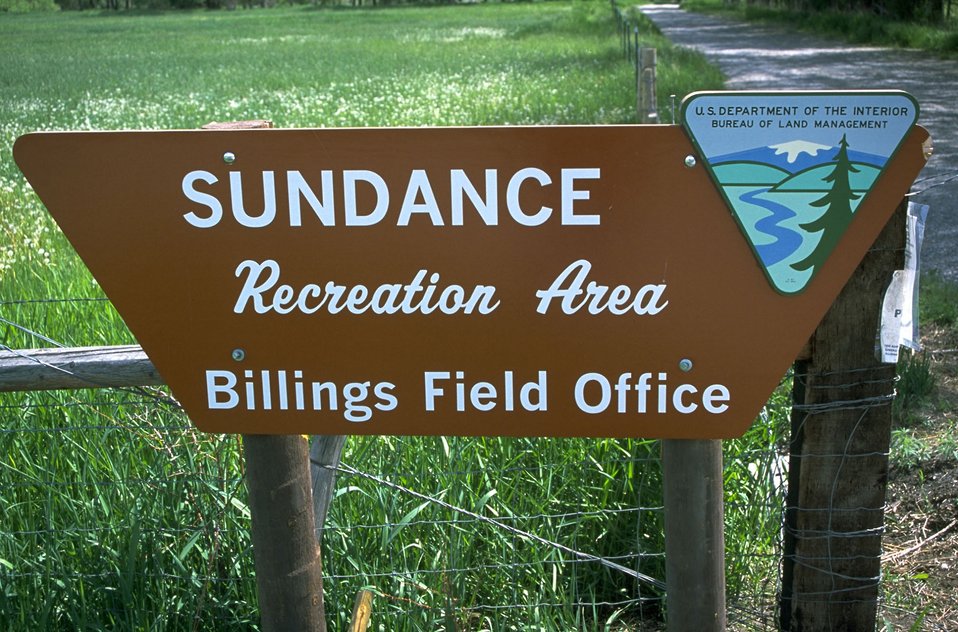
Entrance sign to the Sundance Recreation Area